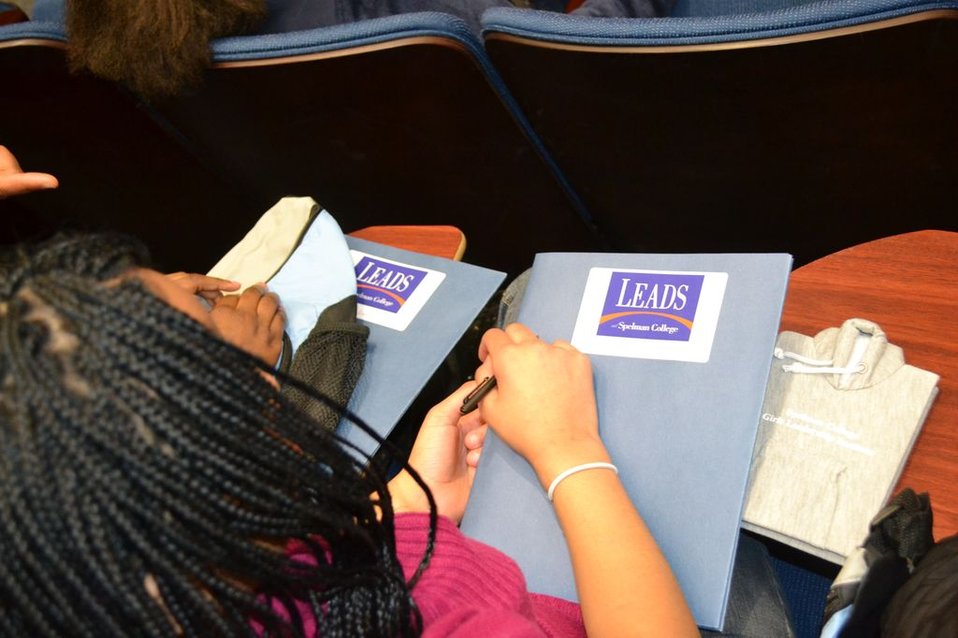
Spelman Girls Institute Nov 2012

A participant at the Institute waits for the morning workshops to begin.